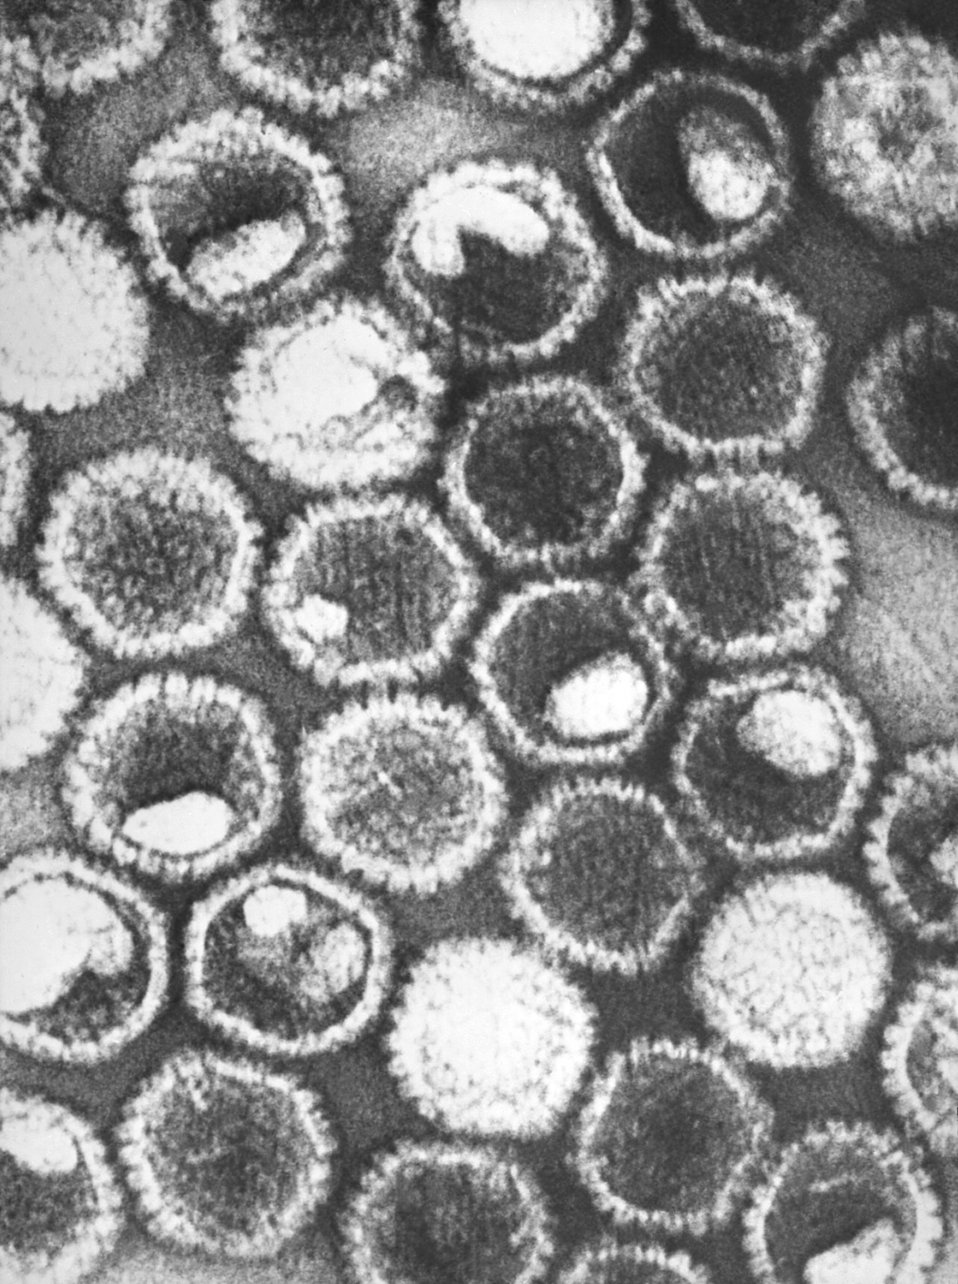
This negatively-stained transmission electron micrograph (TEM) revealed the presence of numerous herpes simplex virions, members of the Herpesviridae virus family. There are two strains of the herpes simplex virus, HSV-1, which is responsible for cold sores, and HSV-2, which is responsible for genital herpes. At the core of its icosahedral proteinaceous capsid, the HSV contains a double-stranded DNA linear genome.